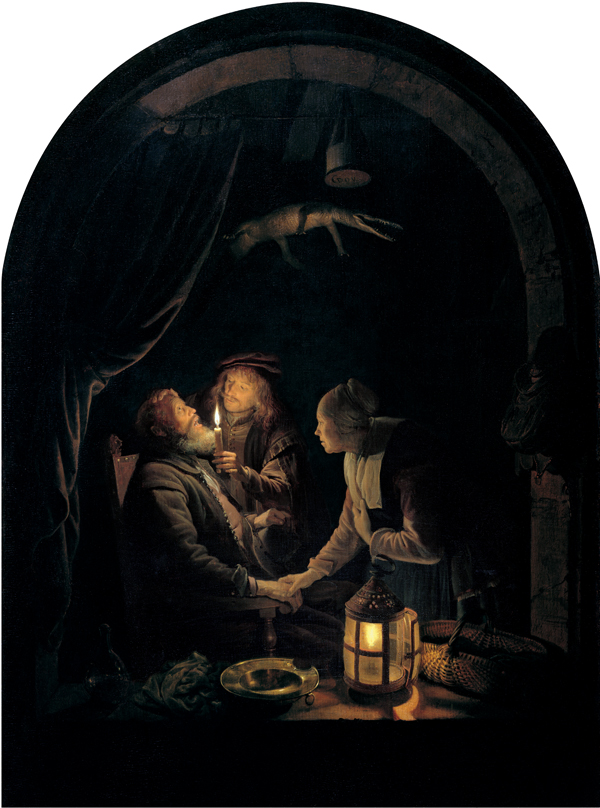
'Dentist by Candlelight', oil on oak panel painting by Gerrit Dou